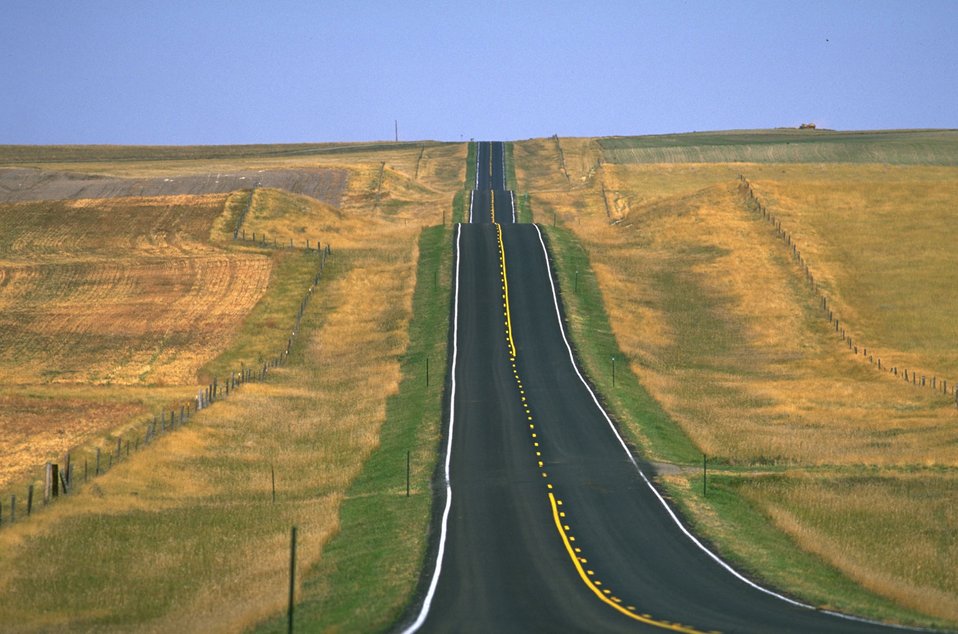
Highway through the Big Sky Back Country Byway